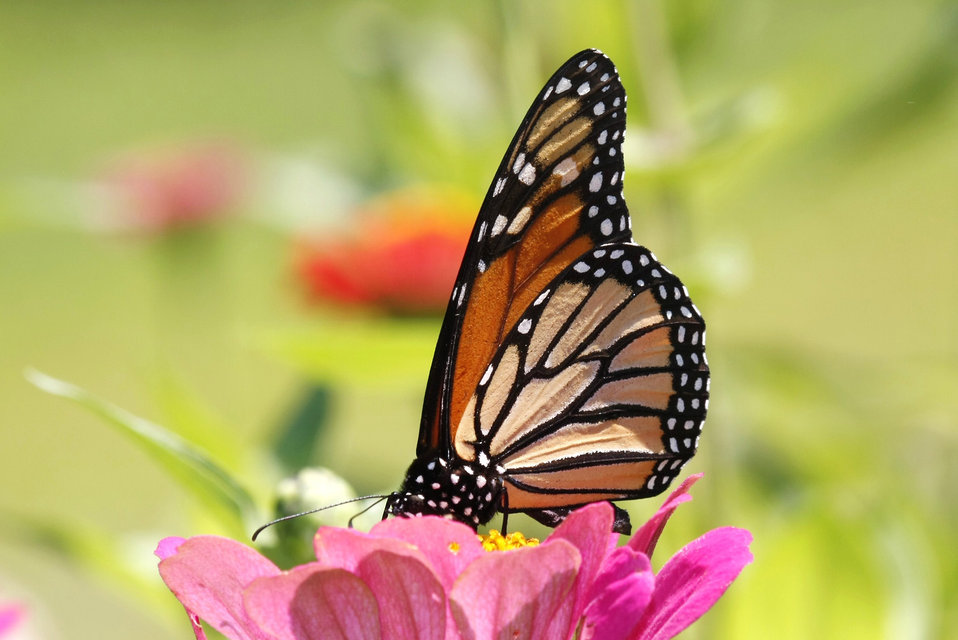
Monarch butterfly at John Heinz National Wildlife Refuge in Philadelphia, Pennsylvania.